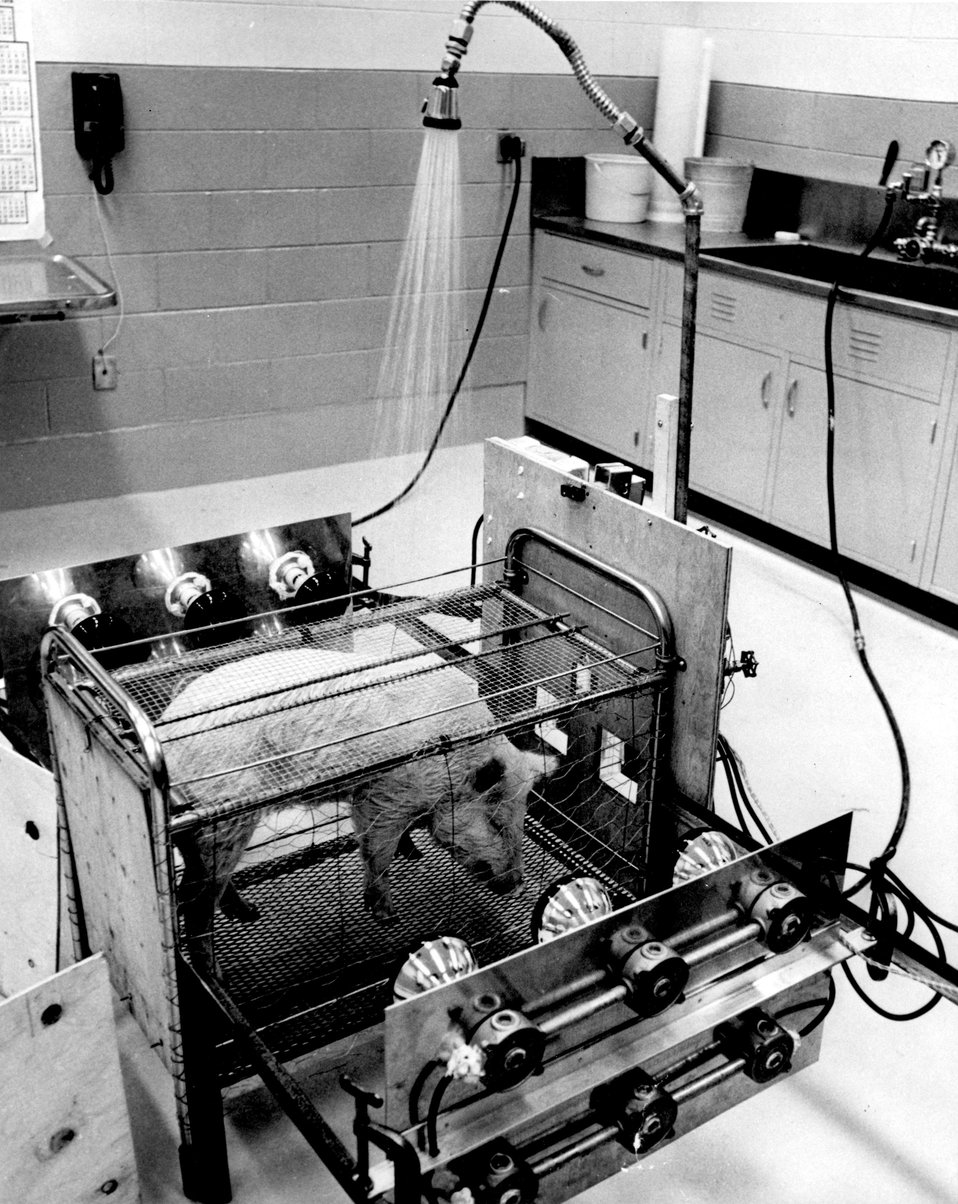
The potential for using Hanford miniature swine in behavioral studies involving radiation or heat stress is being investigated at the Atomic Energy Commission's Pacific Northwest Laboratory. c. 1972